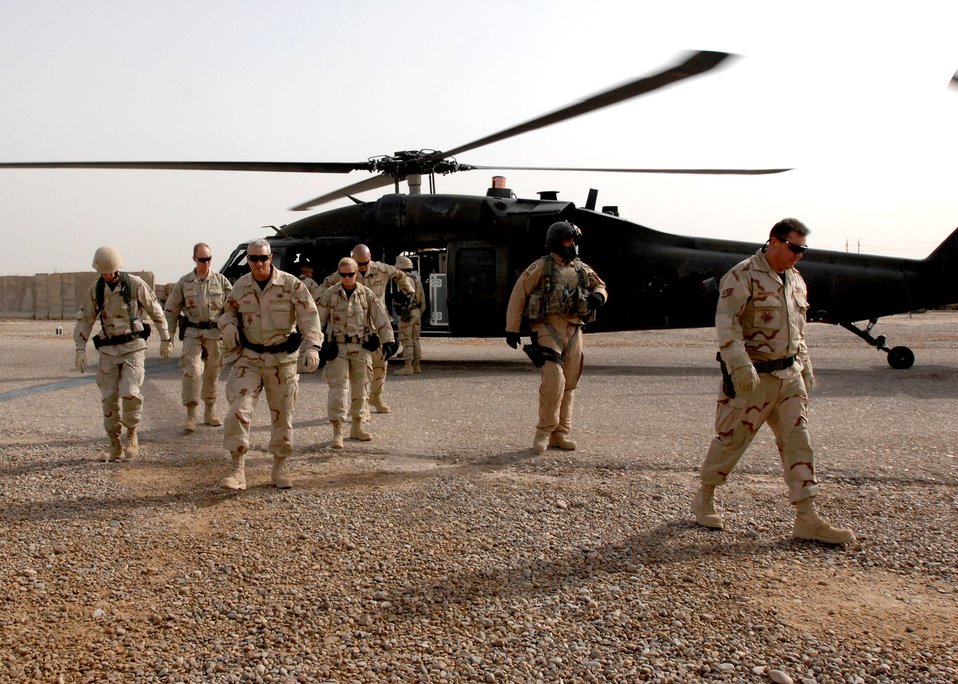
On tour in the AOR

Members of the U.S. Central Command Air Forces Band